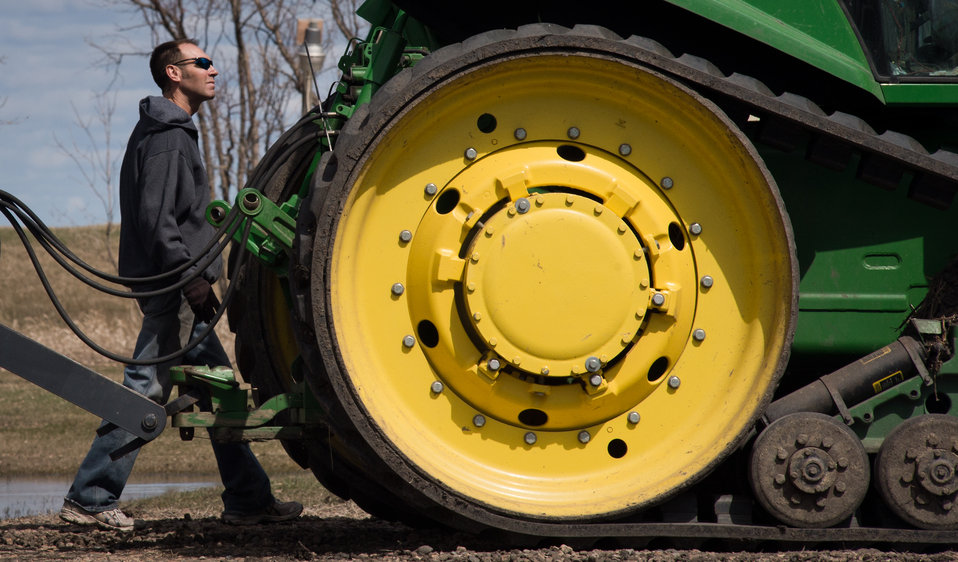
Jeff Hoff checks the farm equipment at his farmstead in Perley, MN, on Tuesday, April 30, 2013. With the assistance of the U.S. Department of Agriculture (USDA), he was able to build up and modify an earthen dike (seen in background) that is currently holding back flood waters around his home, structures and farm equipment. To learn about the USDA Red River Basin Initiative, see www.mn.nrcs.usda.gov/news/features13/RRBI.html.